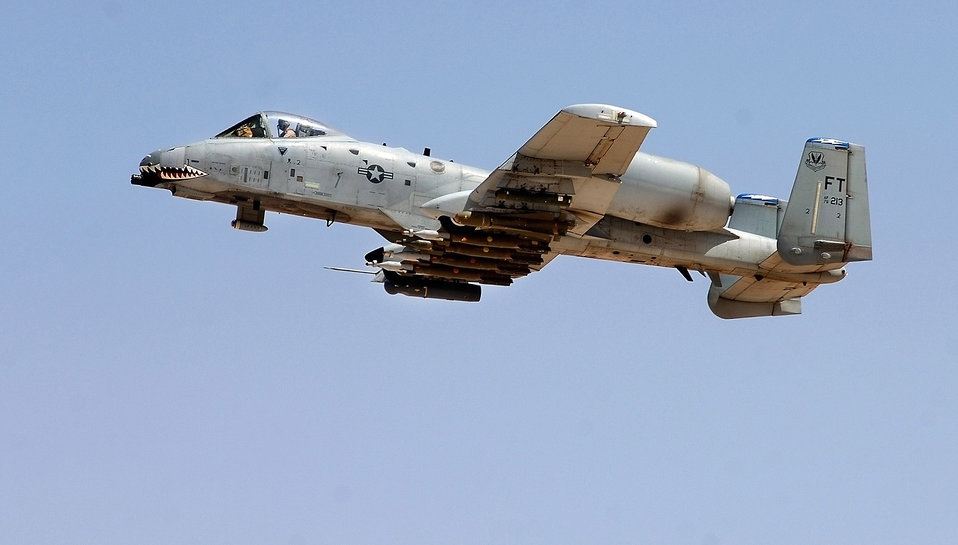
A-10 provides top cover for troops in Iraq

An A-10 Thunderbolt II takes off to provide close-air support to ground troops in Iraq April 25 from Al Asad Air Base, Iraq. The 438th Air Expeditionary Group A-10s perform 10 sorties daily, with 900 sorties in this last four months.